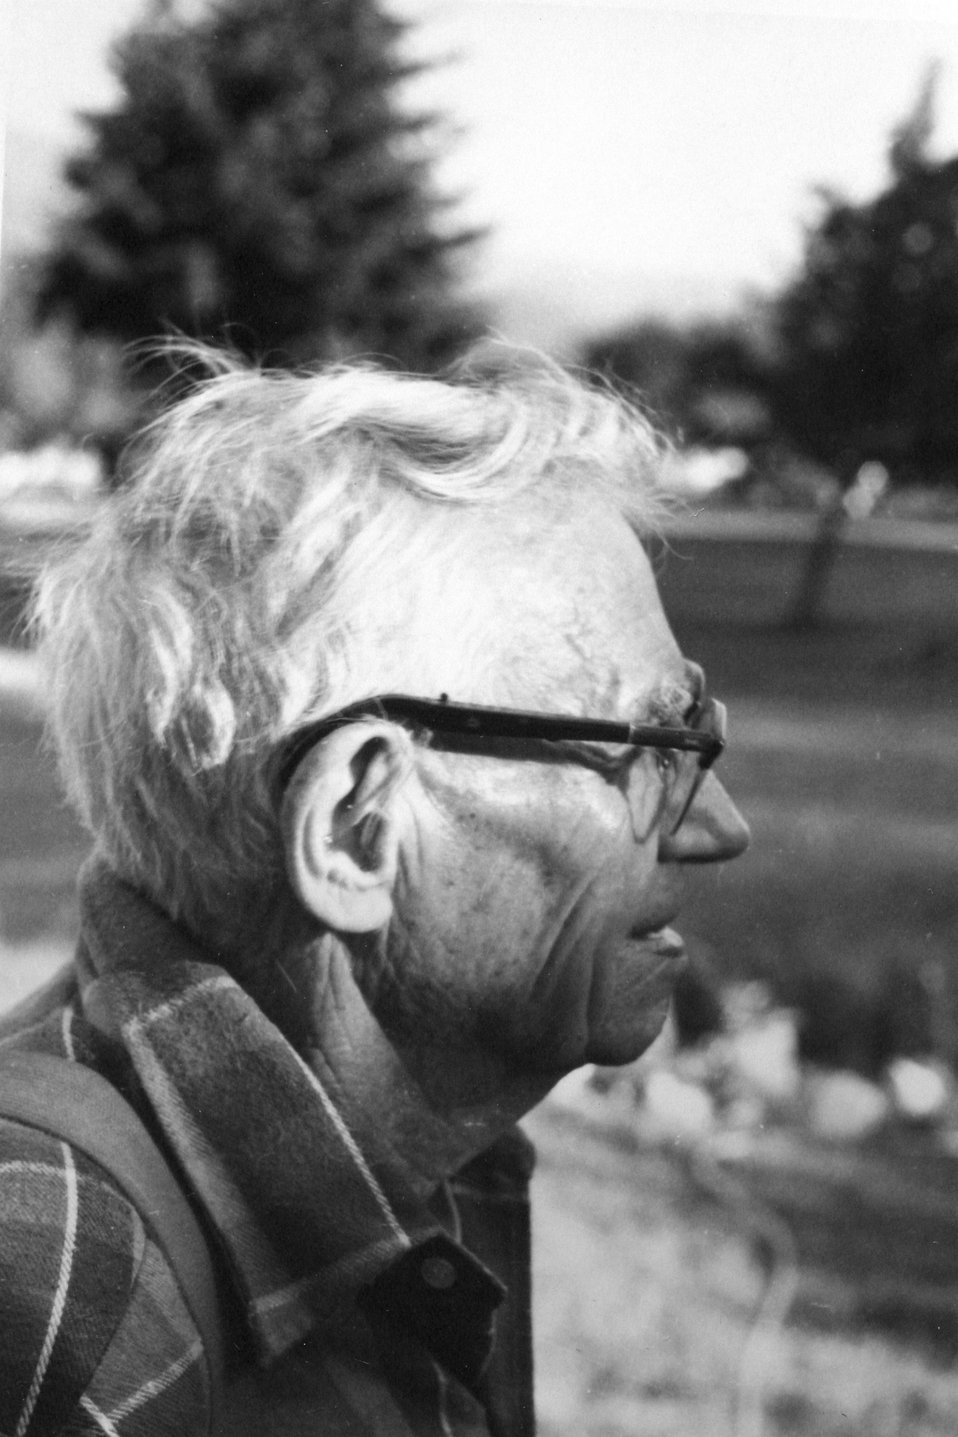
Leo Frye